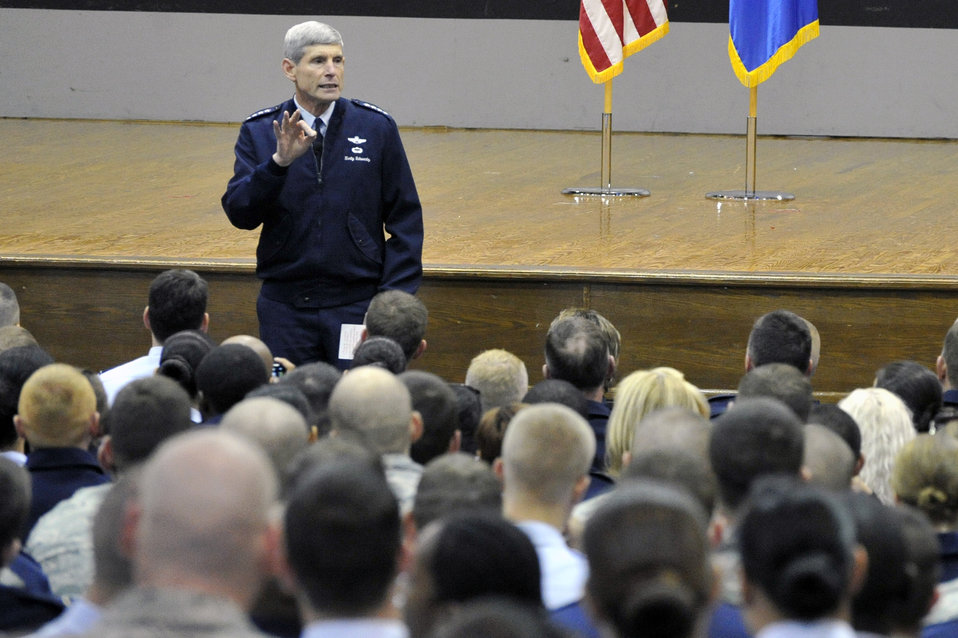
CSAF addresses key Air Force issues at JB Andrews

Air Force Chief of Staff Gen. Norton Schwartz speaks to Airmen Nov. 1, 2011, at Joint Base Andrews, Md. During the chief of staff call, Schwartz spoke about leadership, current Air Force issues and answered questions from the audience.